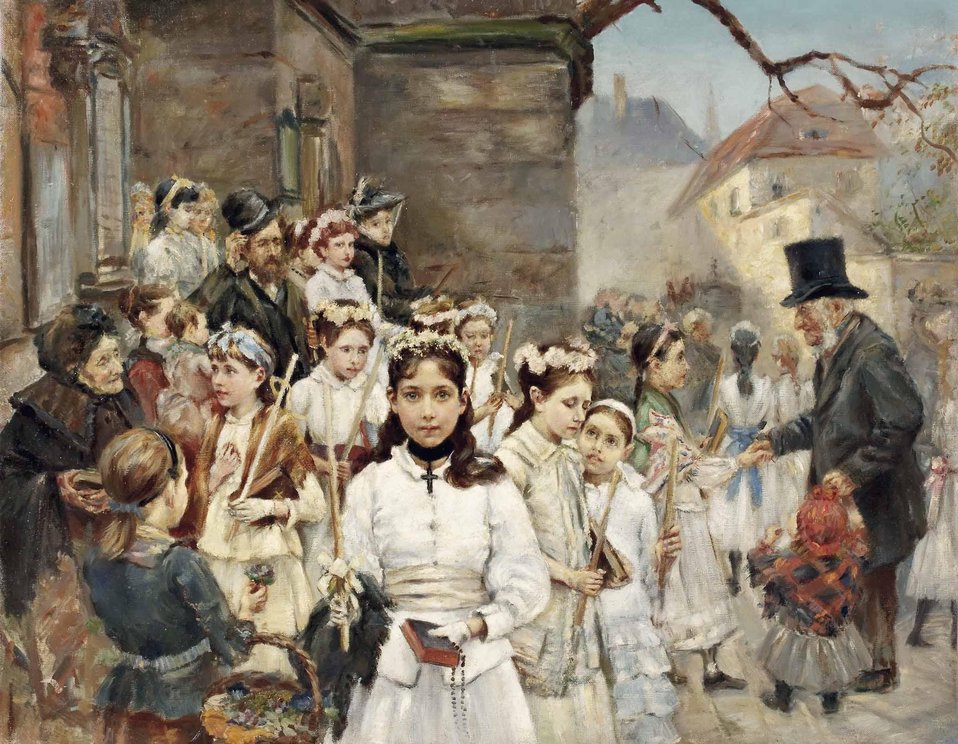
Deutsch: Erstkommunionkinder auf dem Dorfplatz. (wohl Böhmisch 2. Hälfte 19. Jhdt.) Öl auf Leinwand, ca. 54 x 70 cm